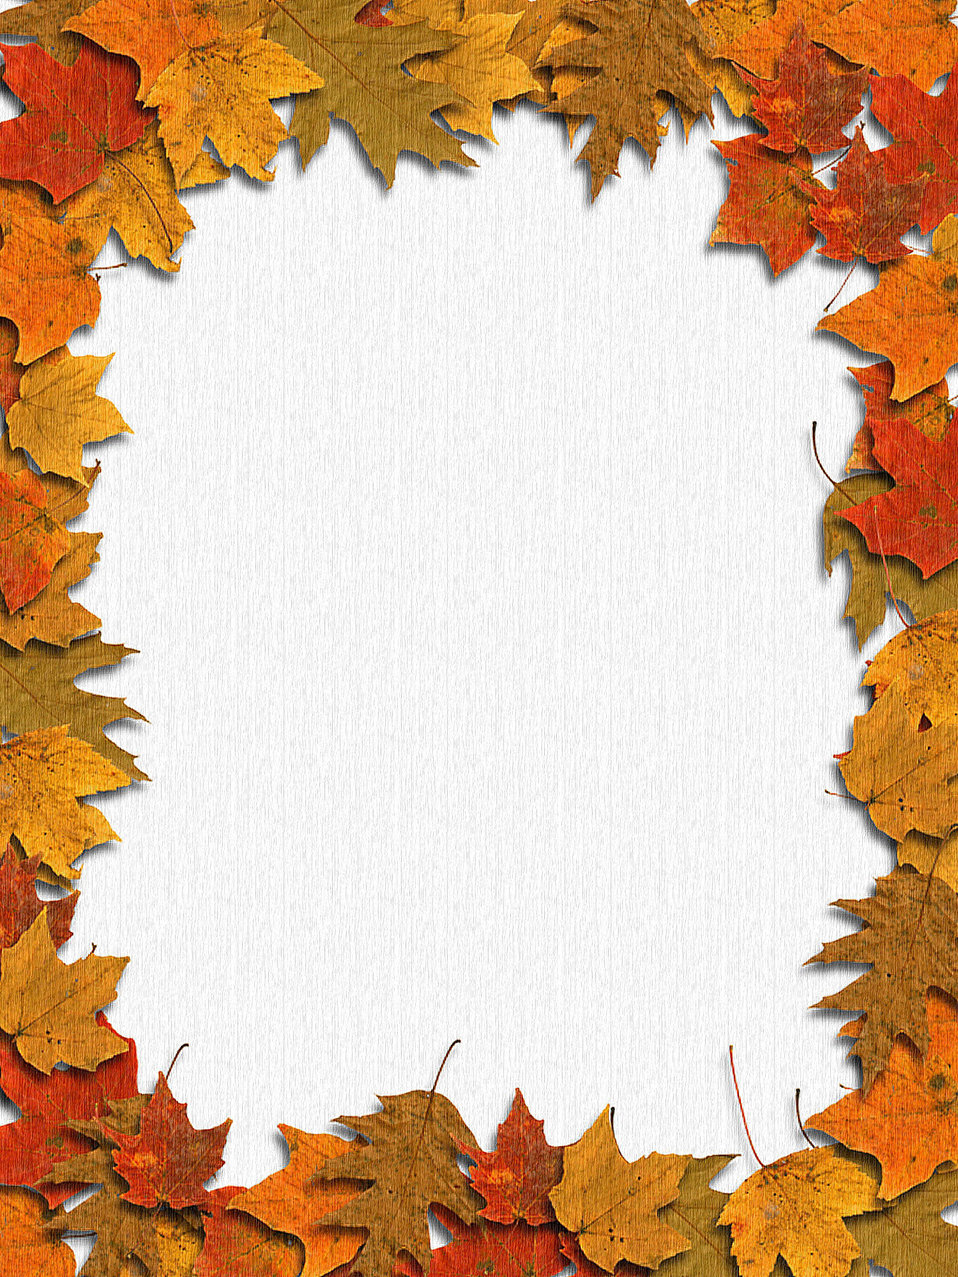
Autumn 2

Background.